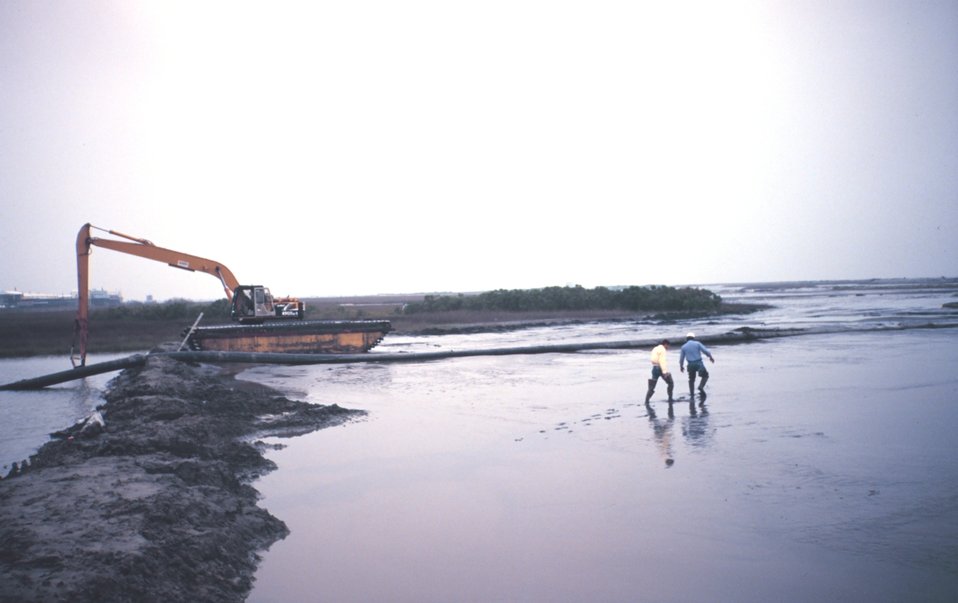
The Greenhill/East Timbalier dredge deposition -- backhoe is used to move pipe to evenly distribute the dredge material. Workers walking over new land.